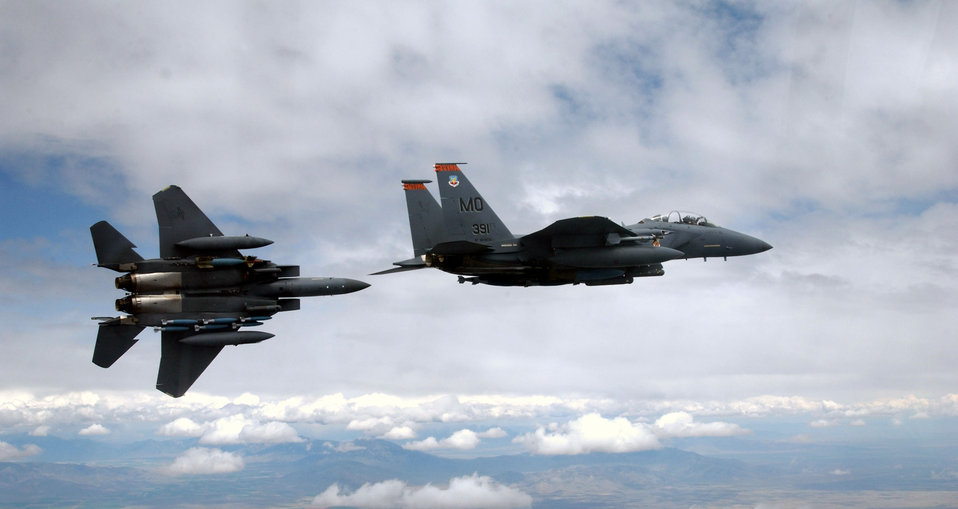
Break left

MOUNTAIN HOME AIR FORCE BASE, Idaho -- An F-15E Strike Eagle breaks from formation. Strike Eagles give the 366th Fighter Wing here sophisticated air-to-ground attack capabilities and air-to-air superiority. They can be equipped with both laser-guided weapons and air-to-air missiles, and use the low-altitude navigation and targeting infrared for night, or LANTIRN system, to find and destroy targets at night in all kinds of weather with precision.